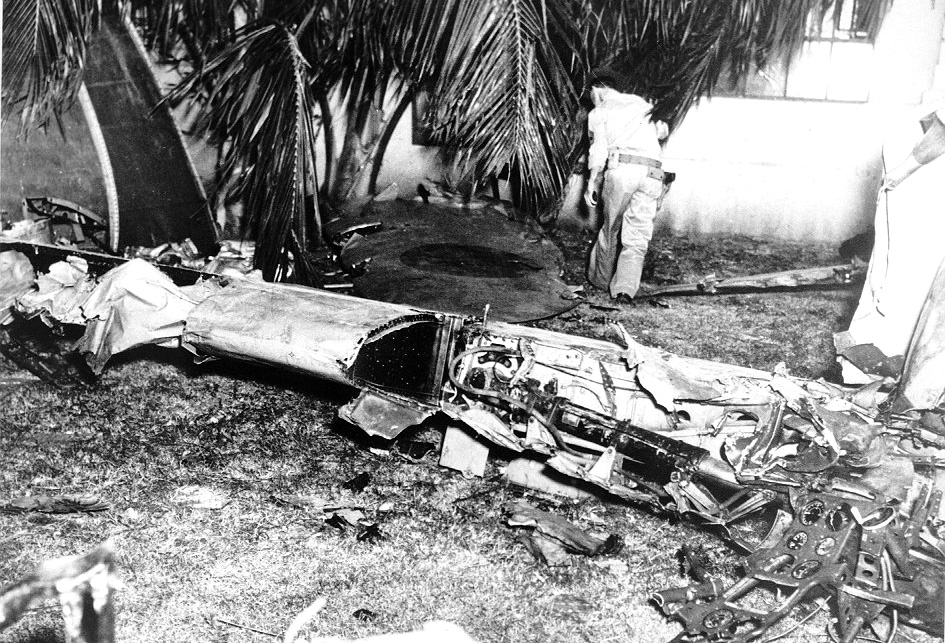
Japanese Zero

Wreckage from a Japanese Zero found on the island of Oahu, Hawaii, following the Dec. 7 attacks.